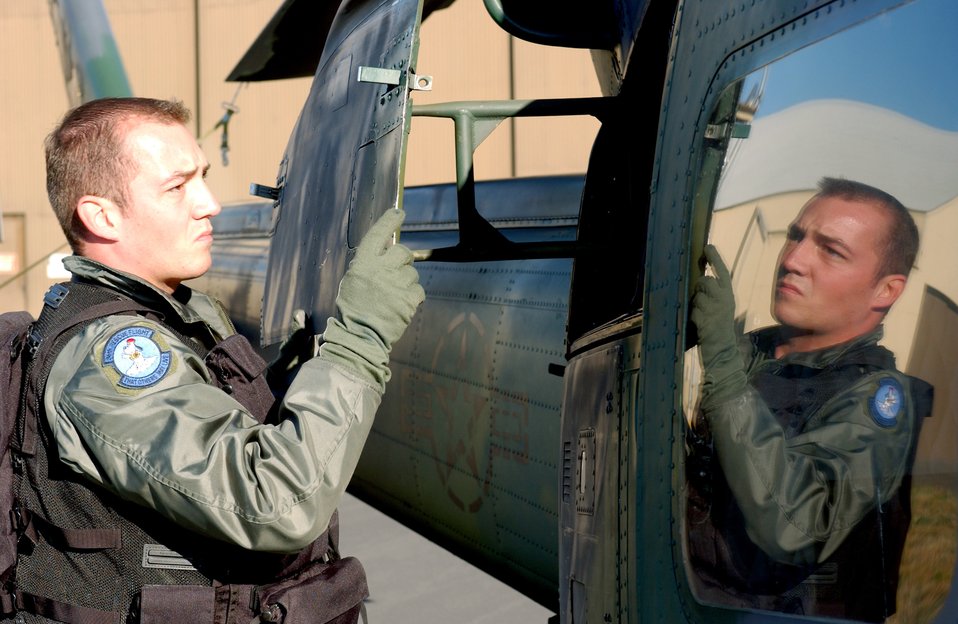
Hands-on training

FAIRCHILD AIR FORCE BASE, Wash. -- Senior Airman James Kempfer conducts a pre-flight inspection of a UH-1N Helicopter assigned to the 36th Rescue Flight. The flight supports the U.S. Air Force Survival School through hands-on helicopter operations and provides assistance to local authorities when the national search and rescue plan is implemented.